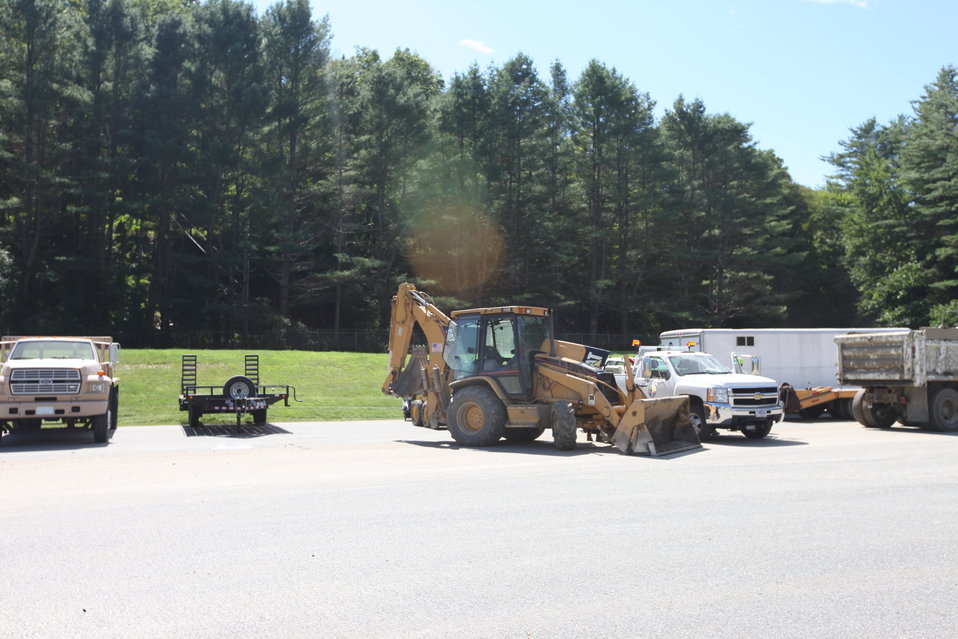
Storm damage relief at White River NFH

Heavy equipment operators came from other USFWS stations to help clean up.